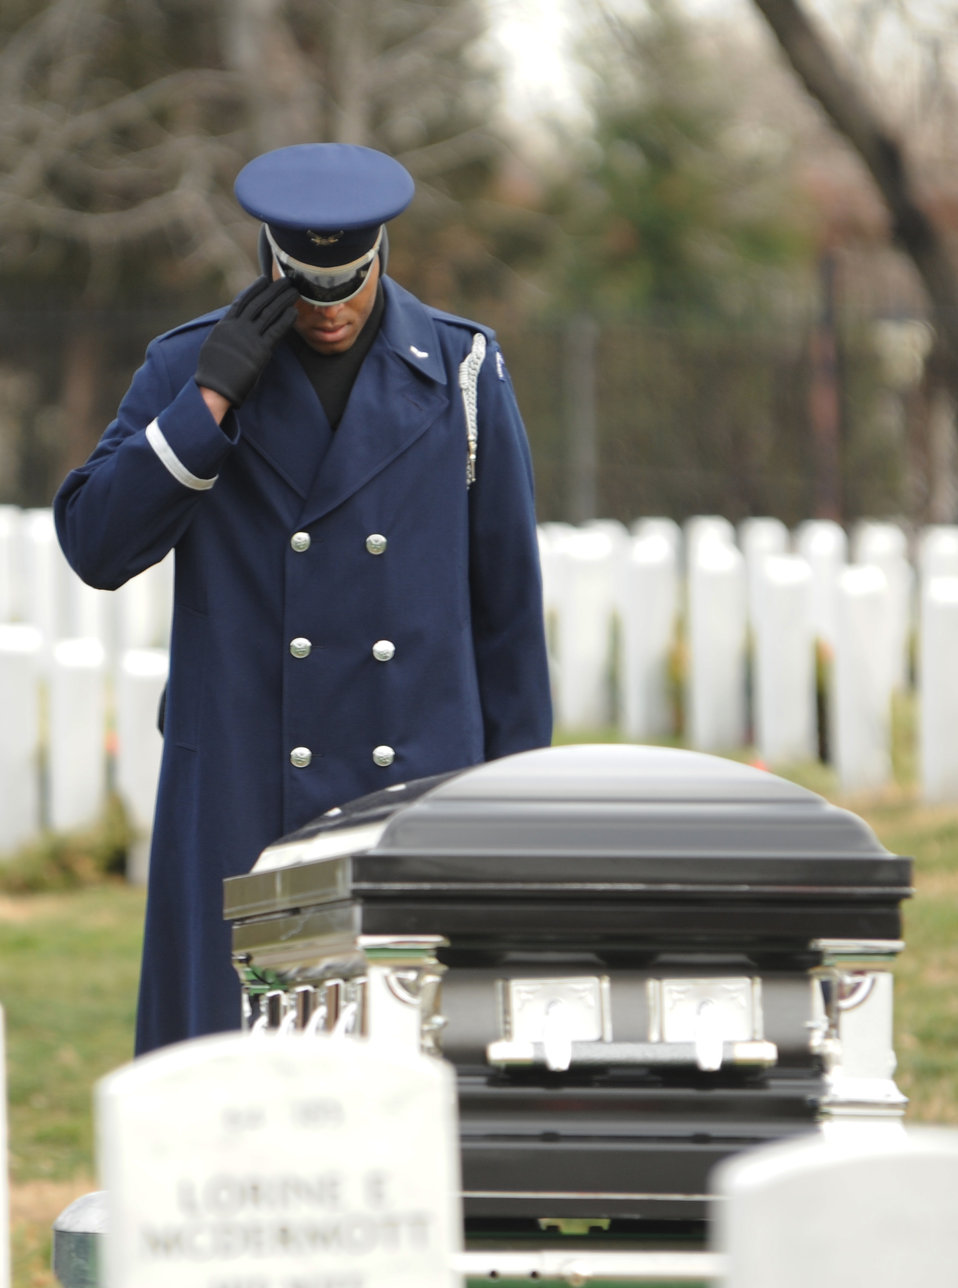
Retired Lt. Col. Luke Weathers Jr. funeral

A member of the U.S. Air Force Honor Guard renders a final salute to retired Lt. Col. Luke Weathers Jr. at his burial site Jan. 20, 2012, at Arlington National Cemetery, in Virginia. Weathers’, an original Tuskegee Airman, was one of 300 Tuskegee Airmen who were awarded the Congressional Gold Medal in 2007 for their actions during World War II.